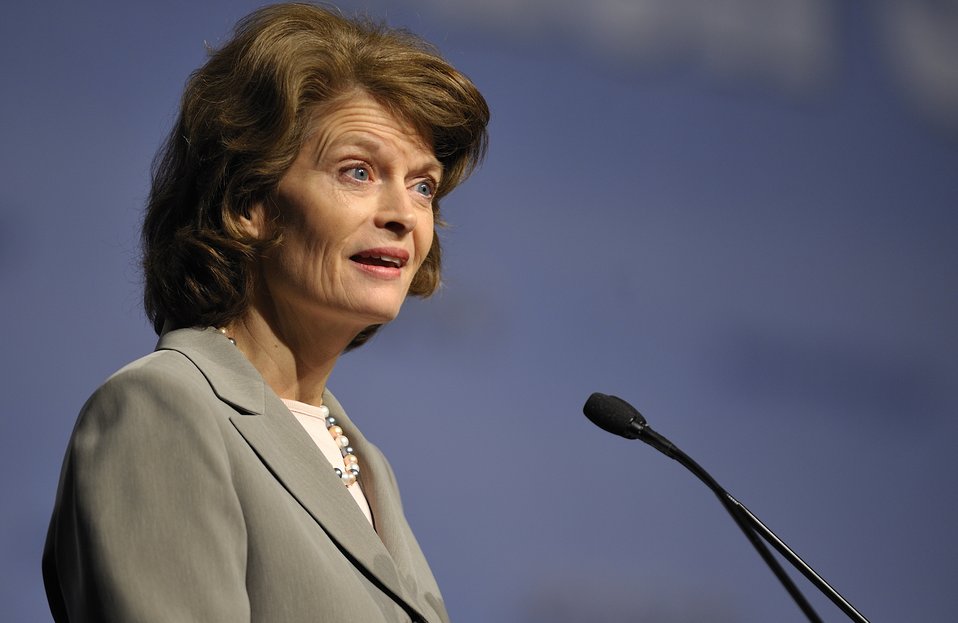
ARPA-E Energy Innovation Summit 2011, 35 of 83

Senator Lisa Murkowski (I-AK)